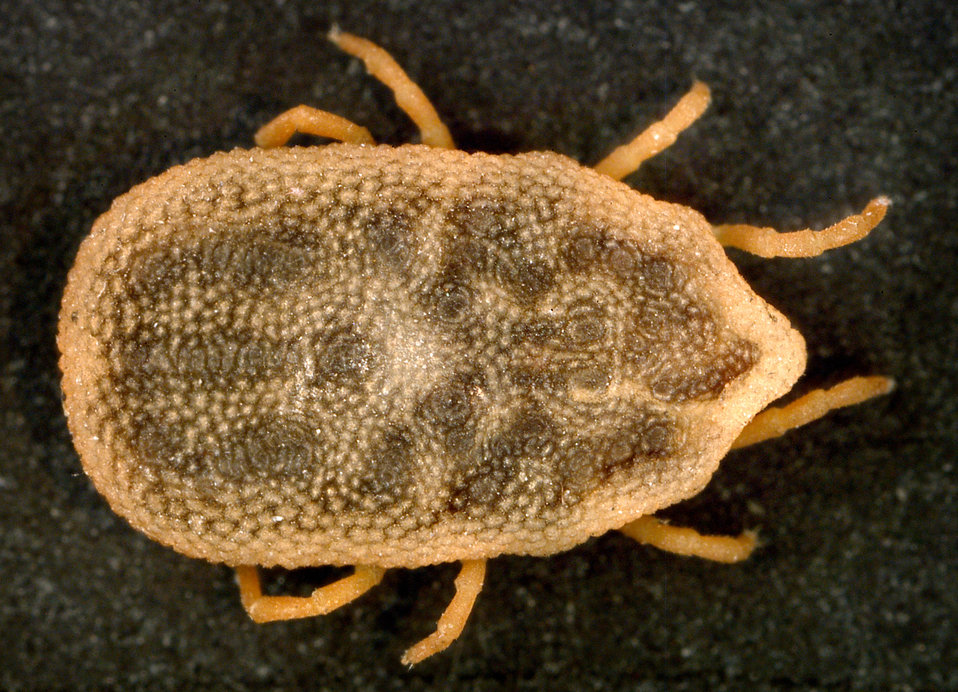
This is a dorsal view of the 'soft tick' Carios kelleyi, formerly Ornithodoros kelleyi, or the 'Bat Tick'.